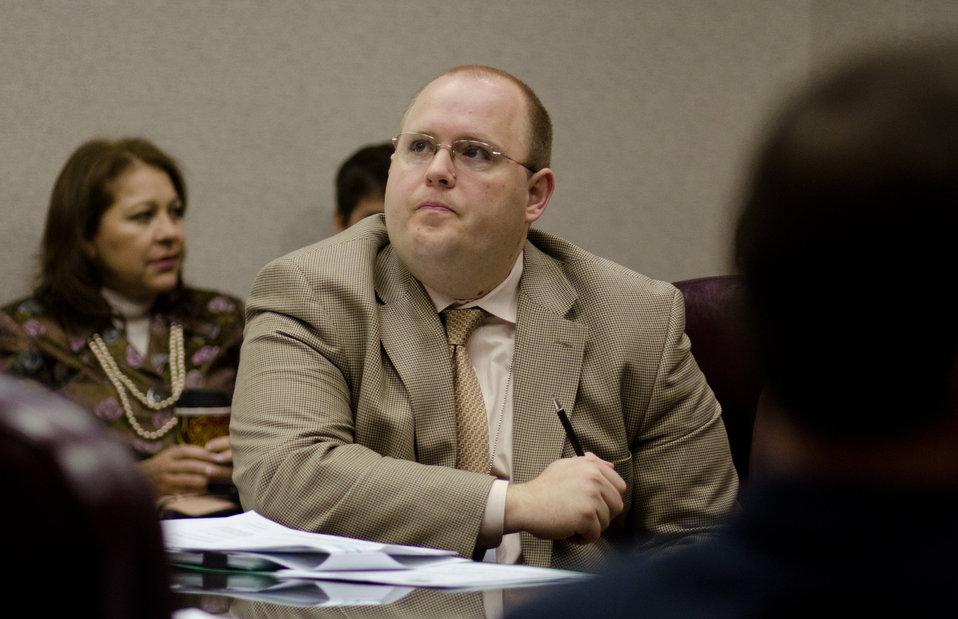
More than 24 people attended the U.S. Department of Agriculture (USDA) Office of Tribal Relations meeting in Washington, DC, on Monday, March 28, 2011.